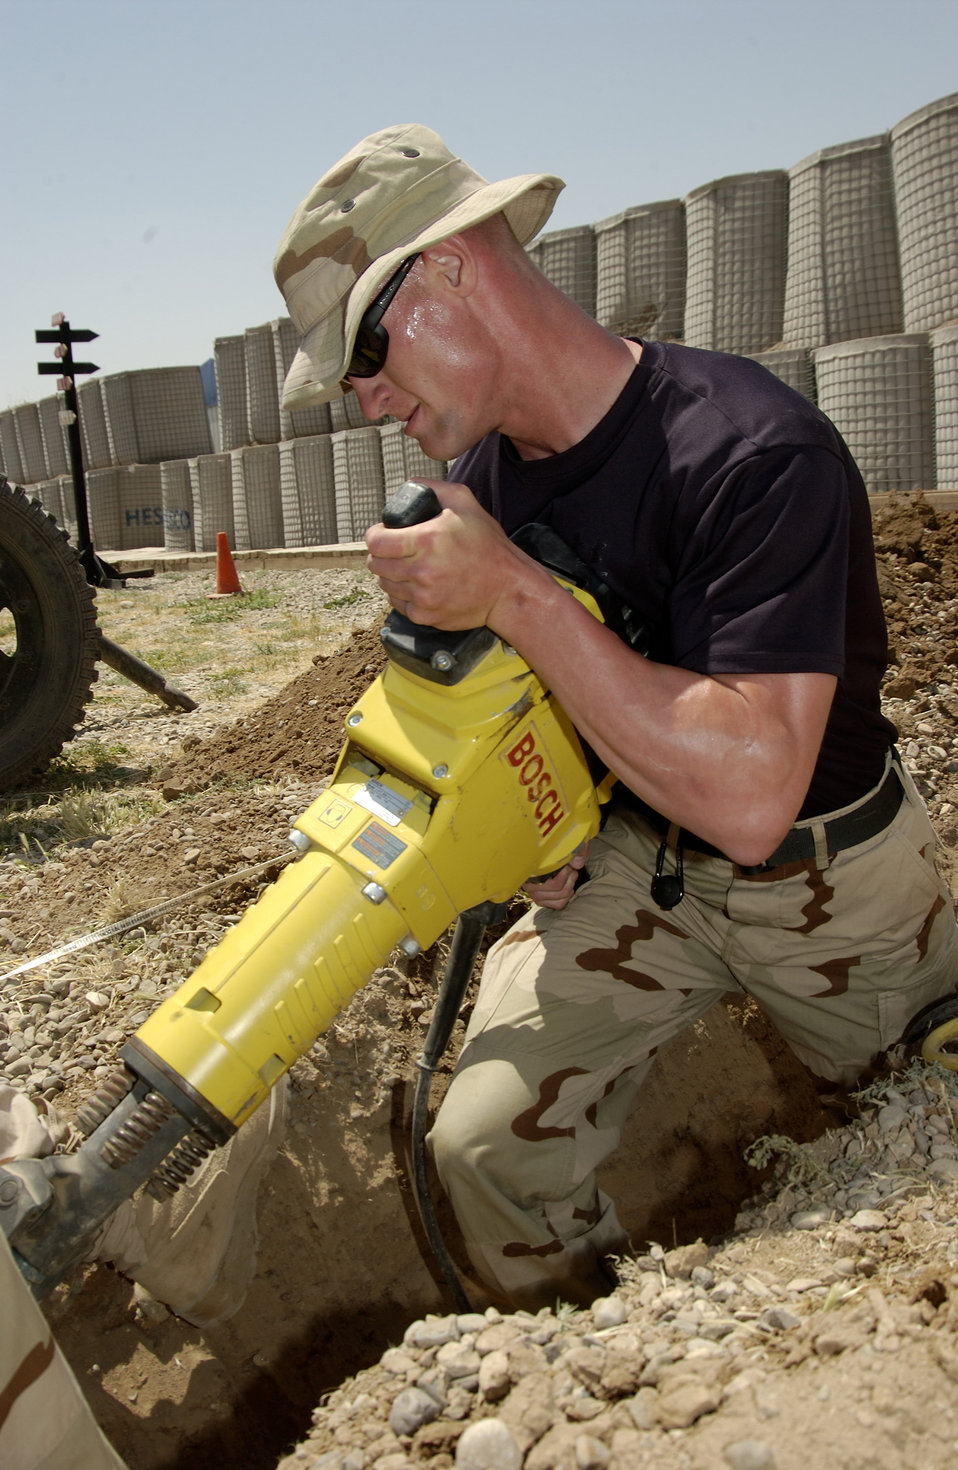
Make a hole

KIRUK AIR BASE, Iraq -- Senior Airman Justin Fusco breaks a hole in a concrete wall to install a conduit here May 27. Airman Fusco is assigned to the 506th Expeditionary Communications Squadron.